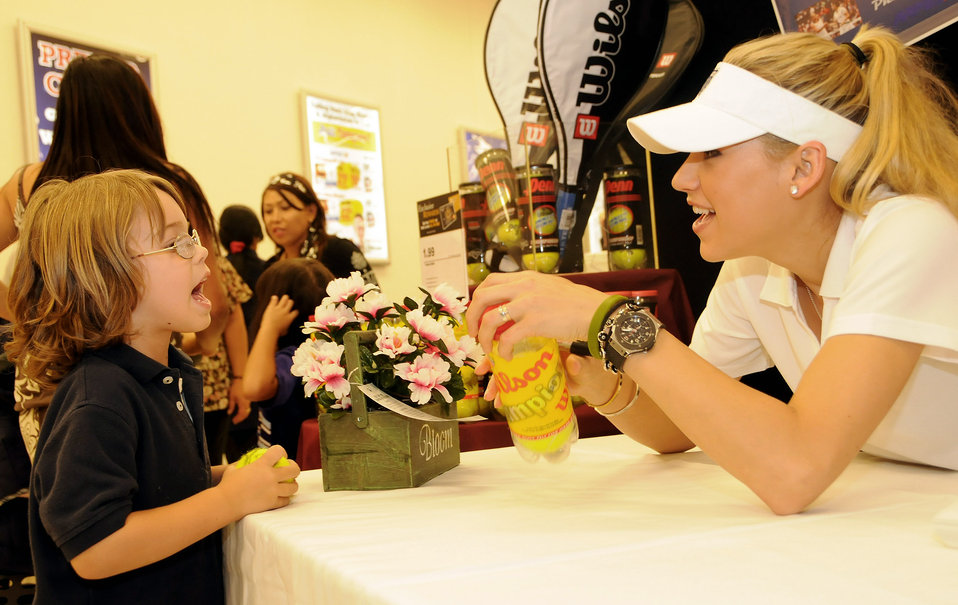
Anna Kournikova visits Andersen

Anna Kournikova signs autographs Oct. 29 at a booth in the base exchange at Andersen Air Force Base, Guam. Ms. Kournikova is looked up to as a role-model, with her appeal and reputation extending far beyond tennis courts.